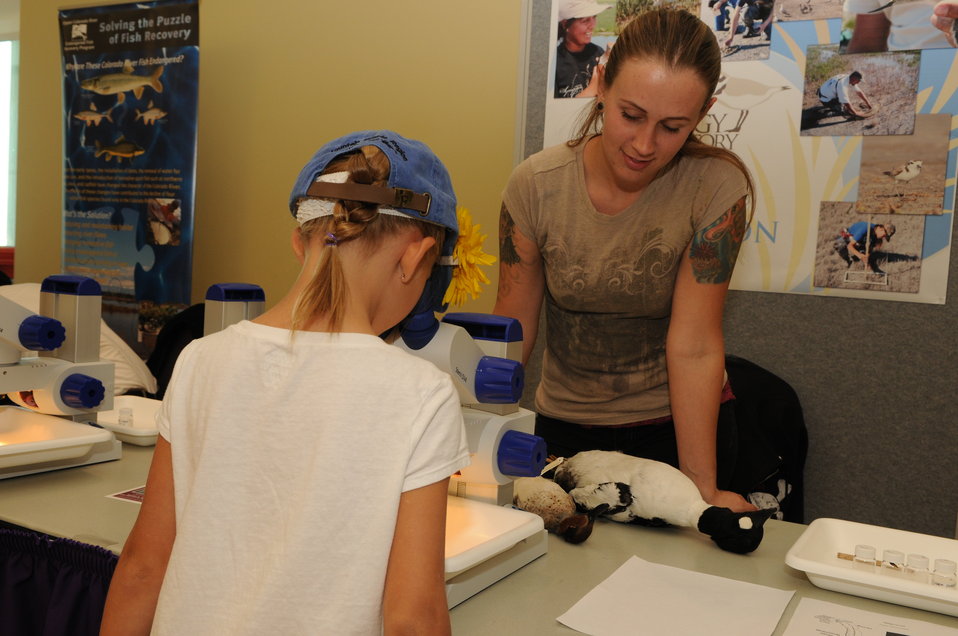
Youth Outreach

The U.S. Fish & Wildlife Service sponsored the 2012 Federal Duck Stamp Art Contest September 28 and 29 in Ogden, Utah, at Weber State University. A panel of five judges was responsible for choosing the art work used to design the 2013-2014 Migratory Bird Hunting and Conservation Stamp.